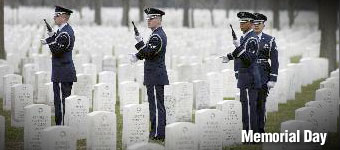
Memorial Day history spotlight graphic